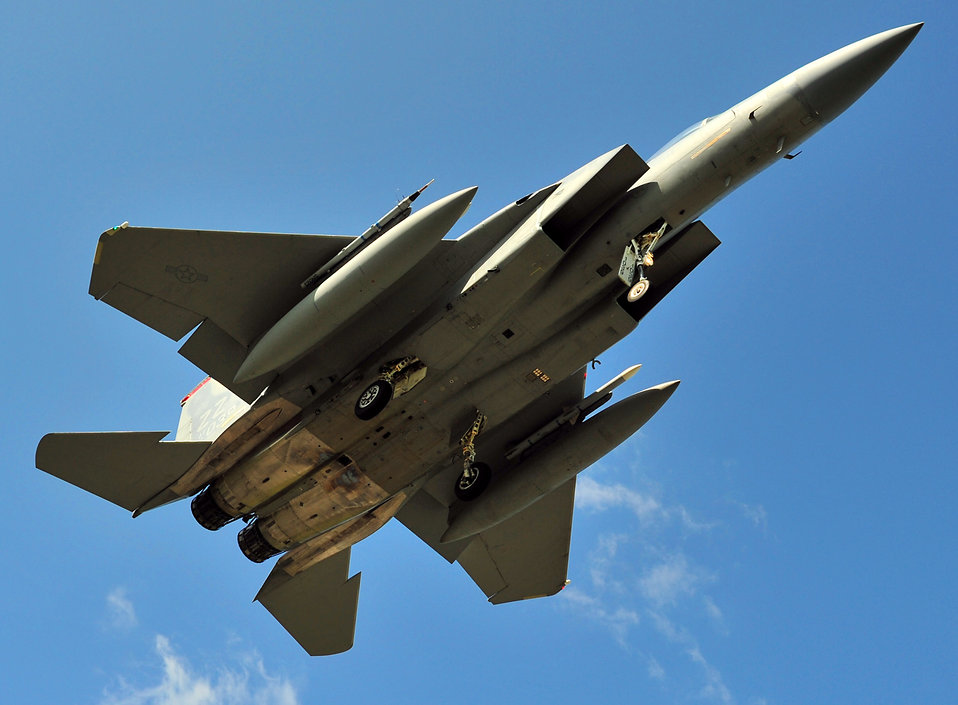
Show of power

An F-15 Eagle prepares to land Feb. 23, 2010, at Kadena Air Base, Japan. Kadena Airmen participated in joint bilateral training with other U.S. forces and the Japan Air Self Defense Force from Feb. 22 to 26.